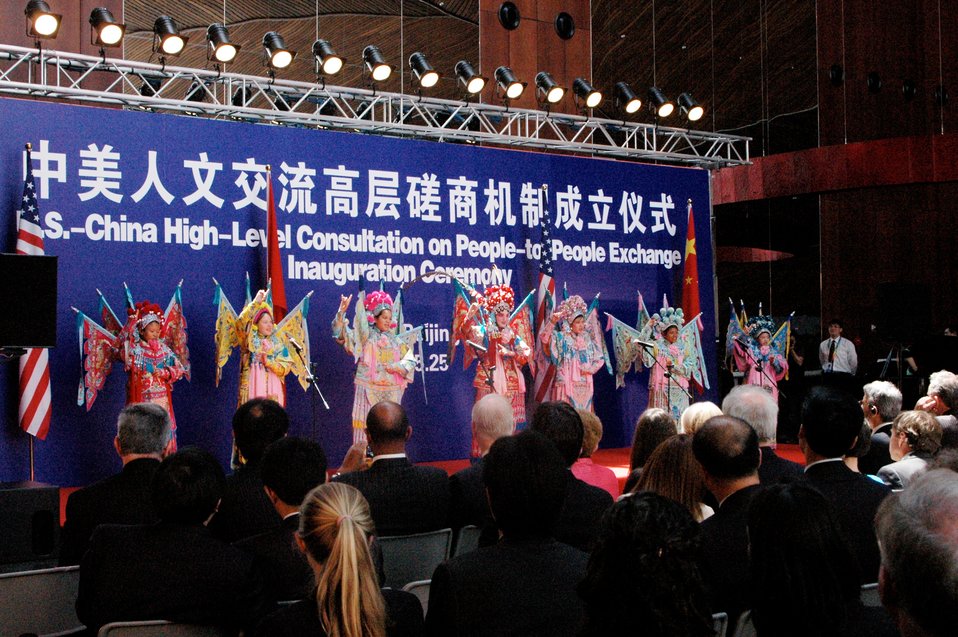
Chinese Artists Perform at People-to-People Launch Ceremony

Chinese artists in traditional costumes perform at the U.S.-China Consultation on People-to-People Exchange Dialogue Launch Ceremony at the National Center for the Performing Arts in Beijing, China, May 25, 2010.